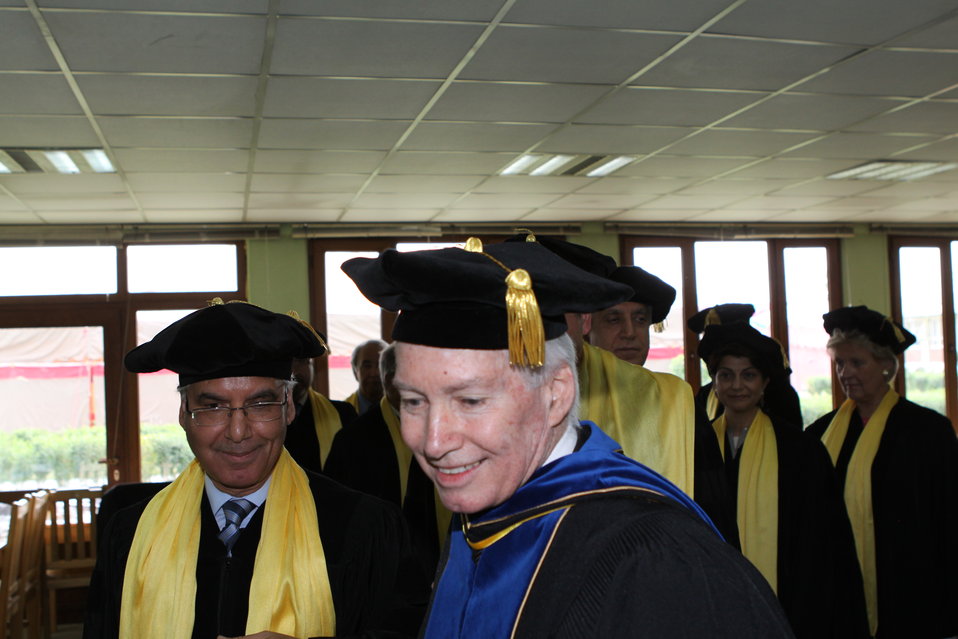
100526 AUAF Graduation 083